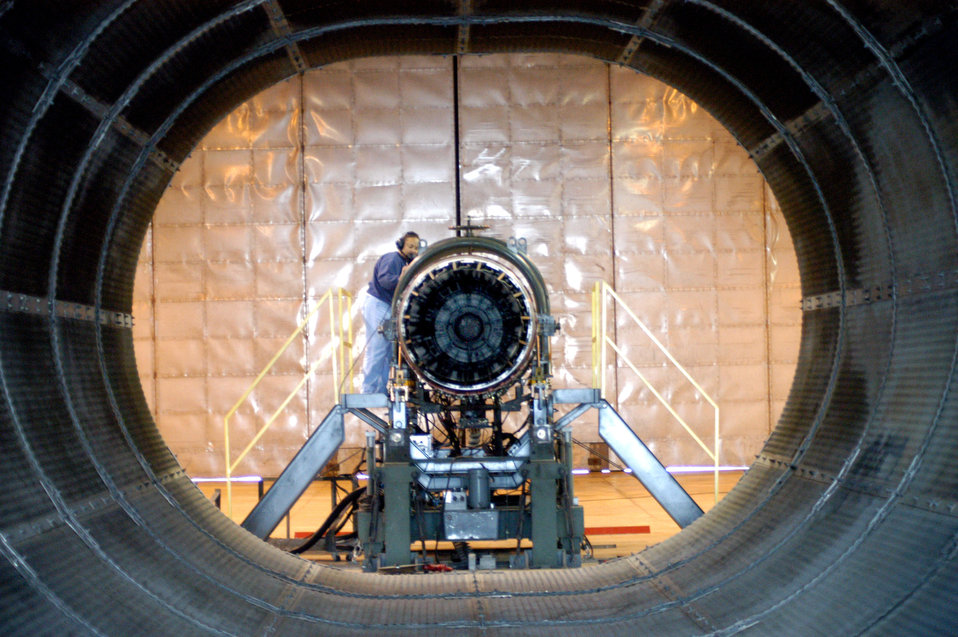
There's a kind of hush…

ROBINS AIR FORCE BASE, Ga. -- Barbara Estrada prepares to test an F-15 Eagle engine in the